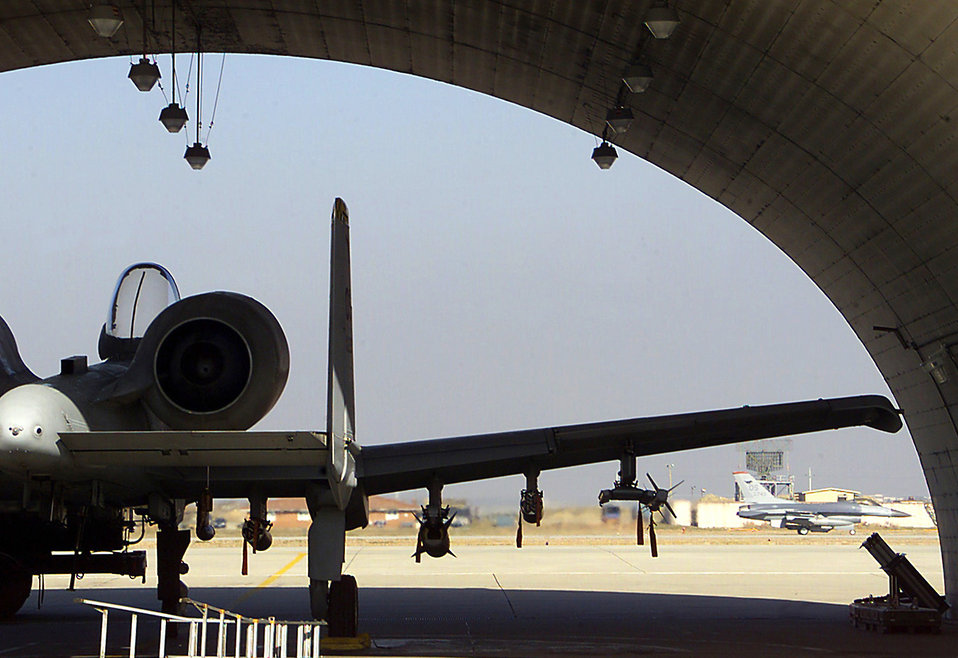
Falcon Flies

OSAN AIR BASE, South Korea -- An F-16 Fighting Falcon takes off during Exercise Beverly Midnight here Dec. 13 .